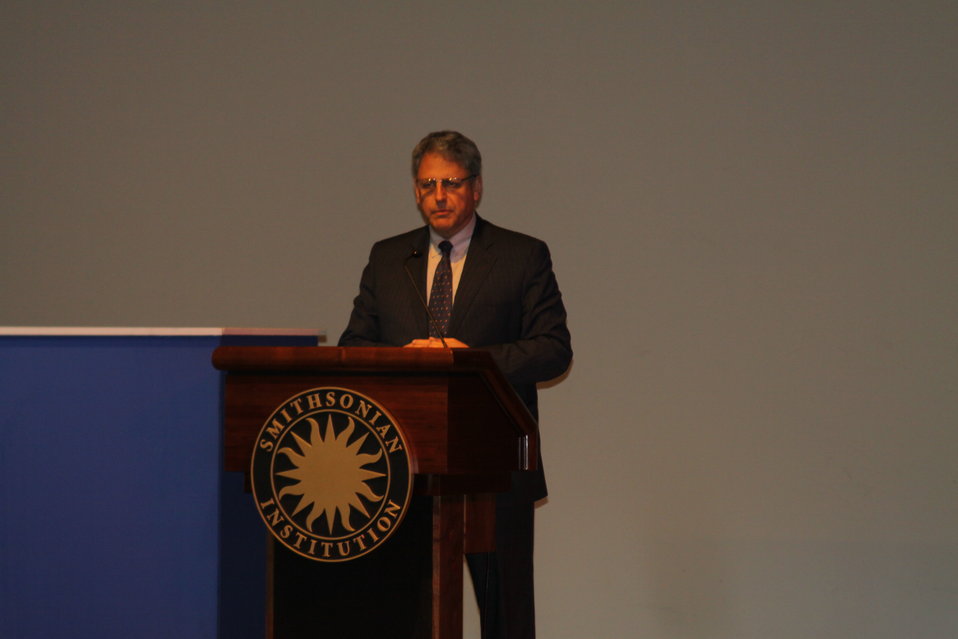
March 12, 2010- Smithsonian Broadband with Elmo